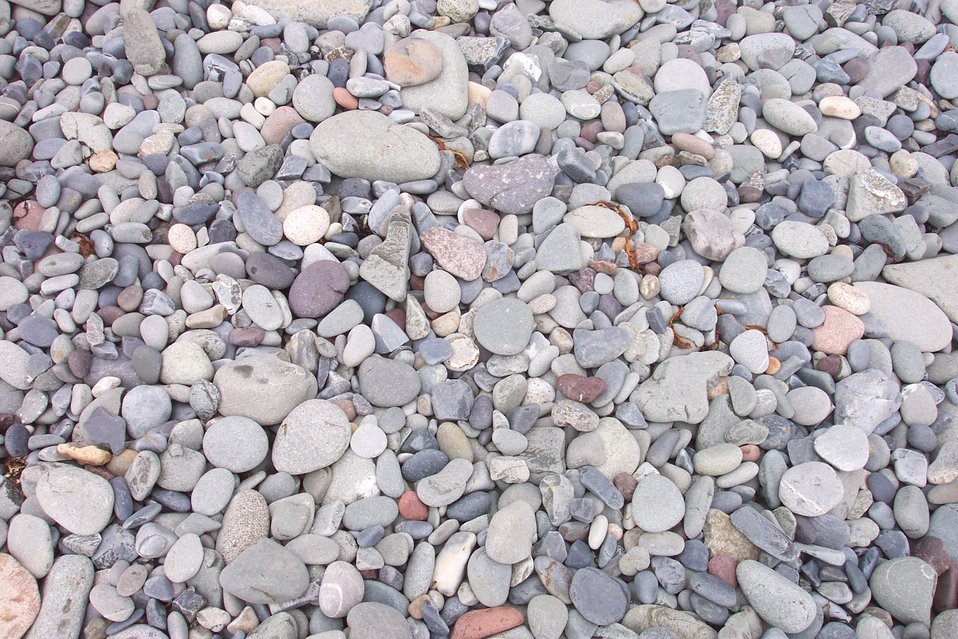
Multi-colored rocks on the cobble beach at West Quoddy Head.